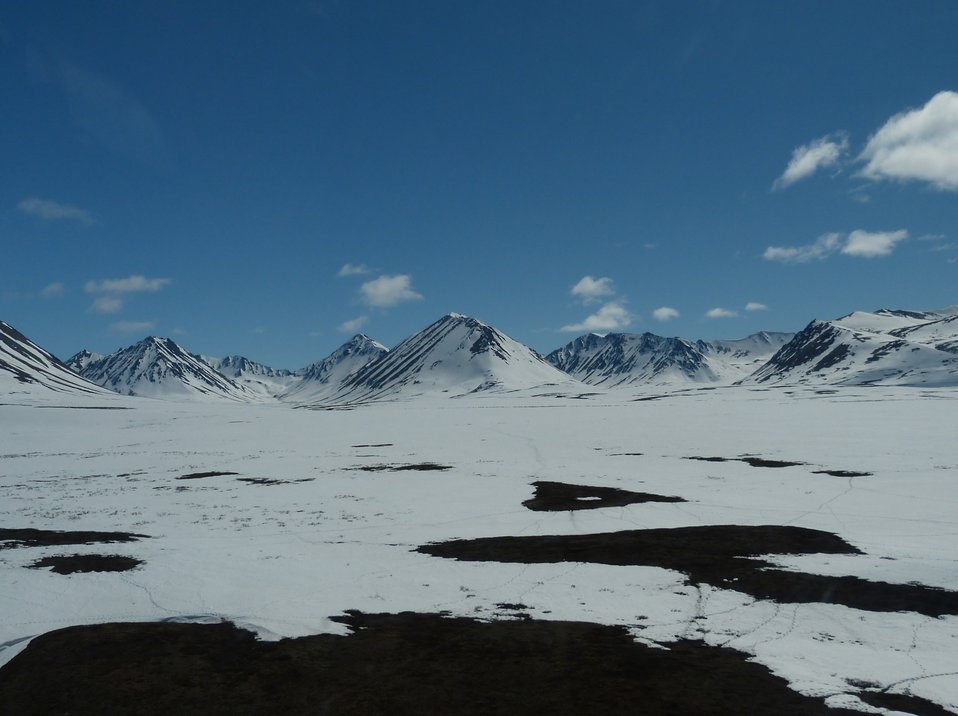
Kilbuck Mountains May2013 KSowl

Cliff-nesting raptor survey, Kilbuck Mountains, Yukon Delta National Wildlife Refuge

Photo credit: Kristine Sowl,
USFWS, YDNWR